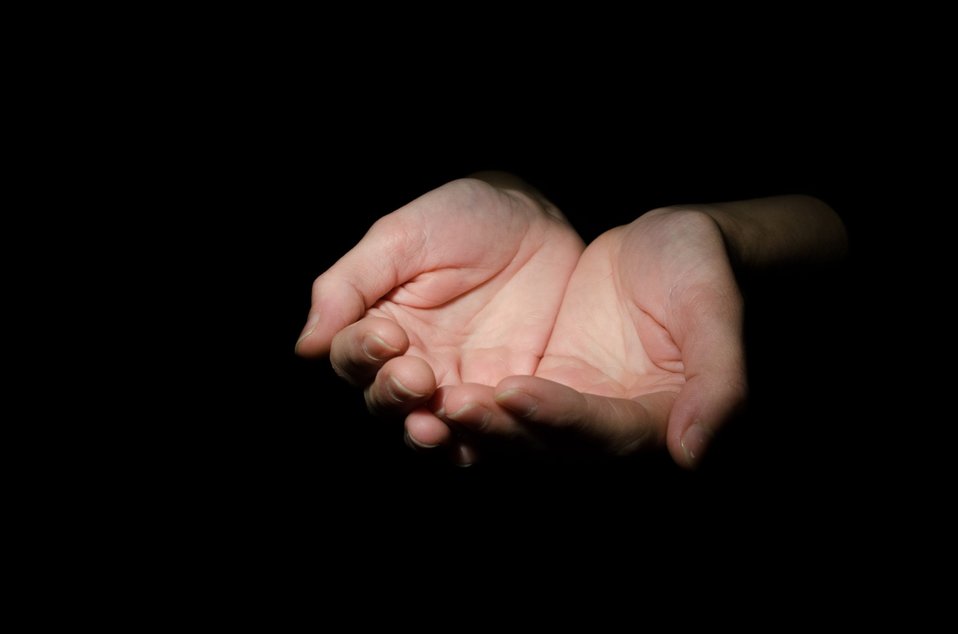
Outstretched cupped hands.